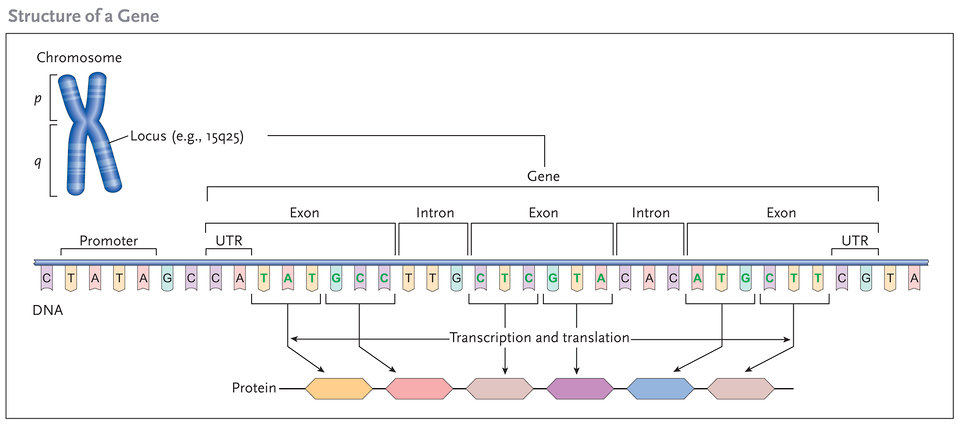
structure of a gene